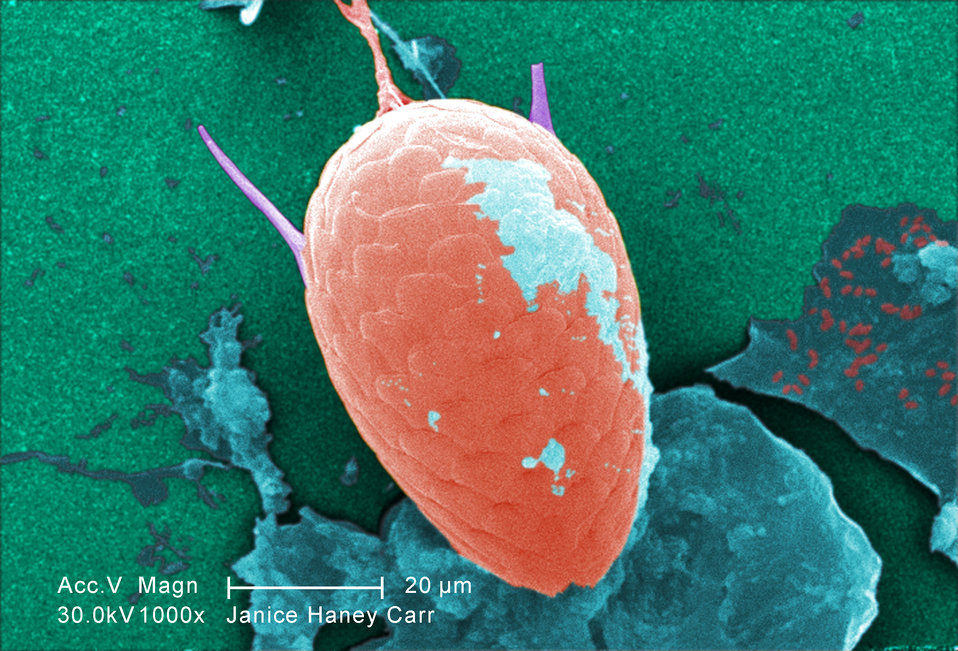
Under a moderate magnification of 1000X, this digitally-colorized scanning electron micrograph (SEM) of an untreated water specimen extracted from a wild stream mainly used to control flooding during inclement weather, revealed the presence of unidentified organisms, which included bacteria, protozoa, and algae. In this particular view, a single copepod-like microorganism was seen occupying the field of view, which seemed to be encased in an outer shell of armour-like plates, or scales. If you look closely, you'll also notice the small grouping of bacteria, which had become enmeshed in a patch of biofilm.